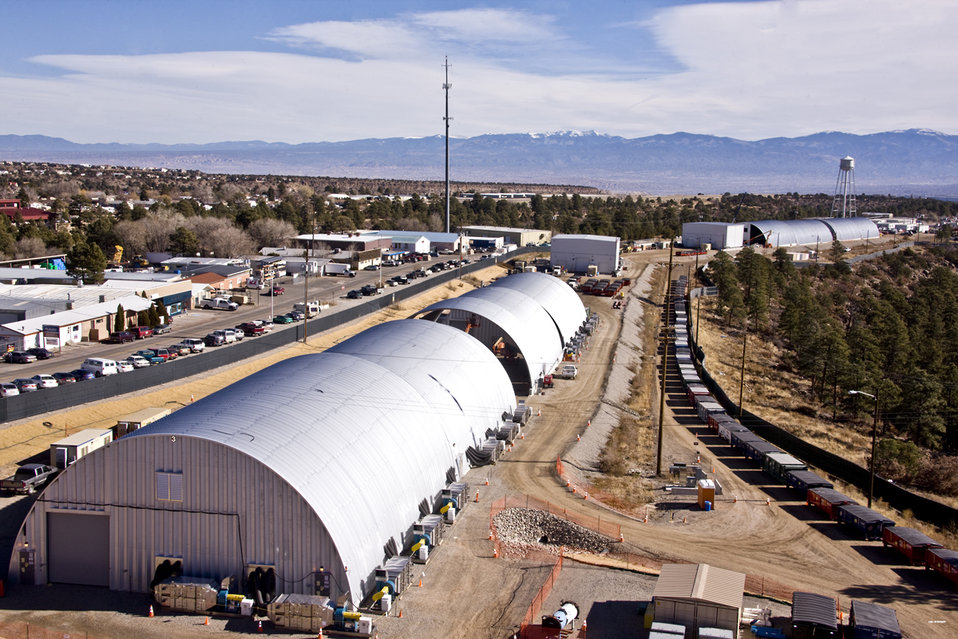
Los Alamos Dig Unveils Items Ranging from Military Trucks to Toothbrush

The excavation of MDA-B was done inside sturdy metal buildings.

In a $110 million Recovery Act project at Los Alamos National Laboratory, workers are excavating a waste disposal site known as Material Disposal Area B (MDA-B). Completion of the MDA-B cleanup will reduce EM’s legacy footprint by more than 260,000 square feet.